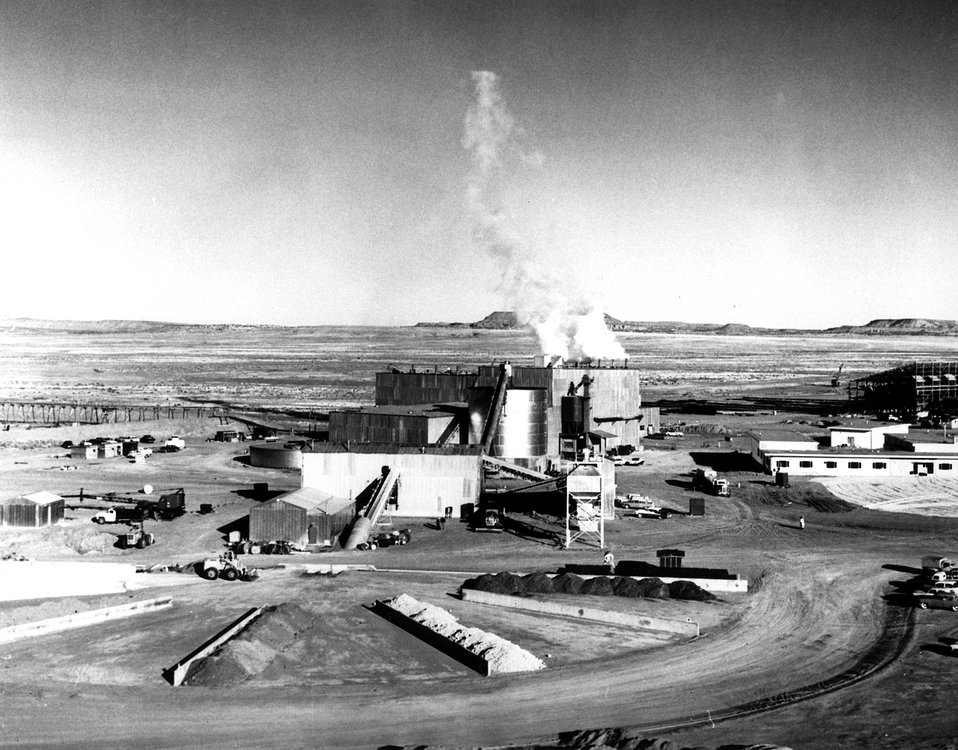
View of Home stake Partners Mill, New Mexico. c. 1958